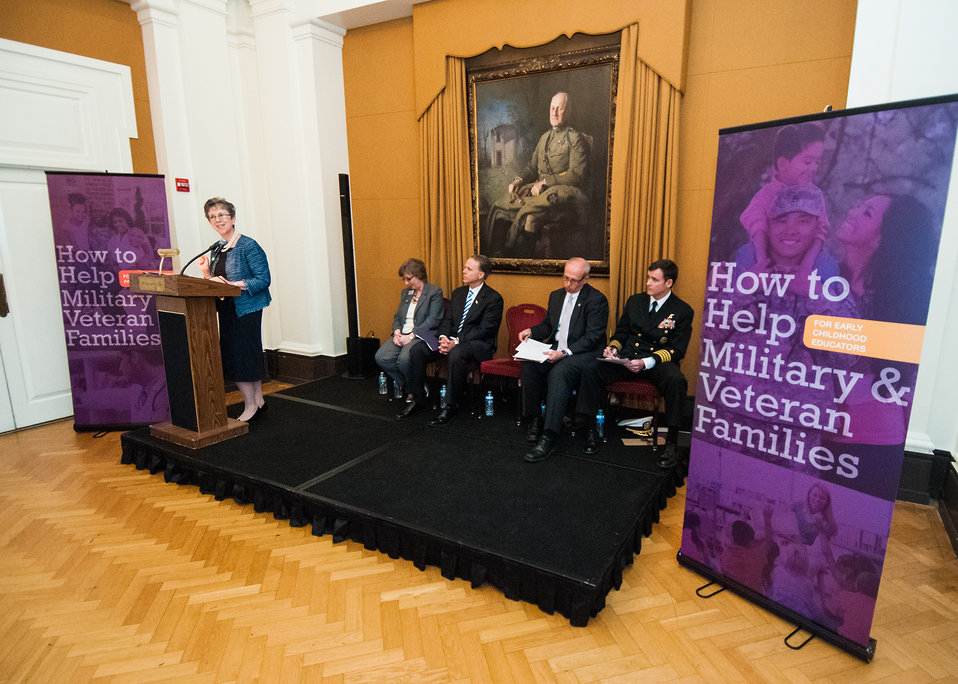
Under Secretary Dr. Catherine Woteki, Research, Education, and Economics and Chief Scientist gave remarks Dr. Jimmy Henning, Associate Dean and Director for University of Kentucky Cooperative Extension gave remarks at the United States Department of Agriculture (USDA) and Department of Defense (DOD) jointly launch event for the 'How to Help Military and Veteran Families' - a series of publications produced jointly by the USDA, National Institute of Food and Agriculture (NIFA) and DOD at the Army-Navy Club in Washington, DC, Monday, April 15, 2013.